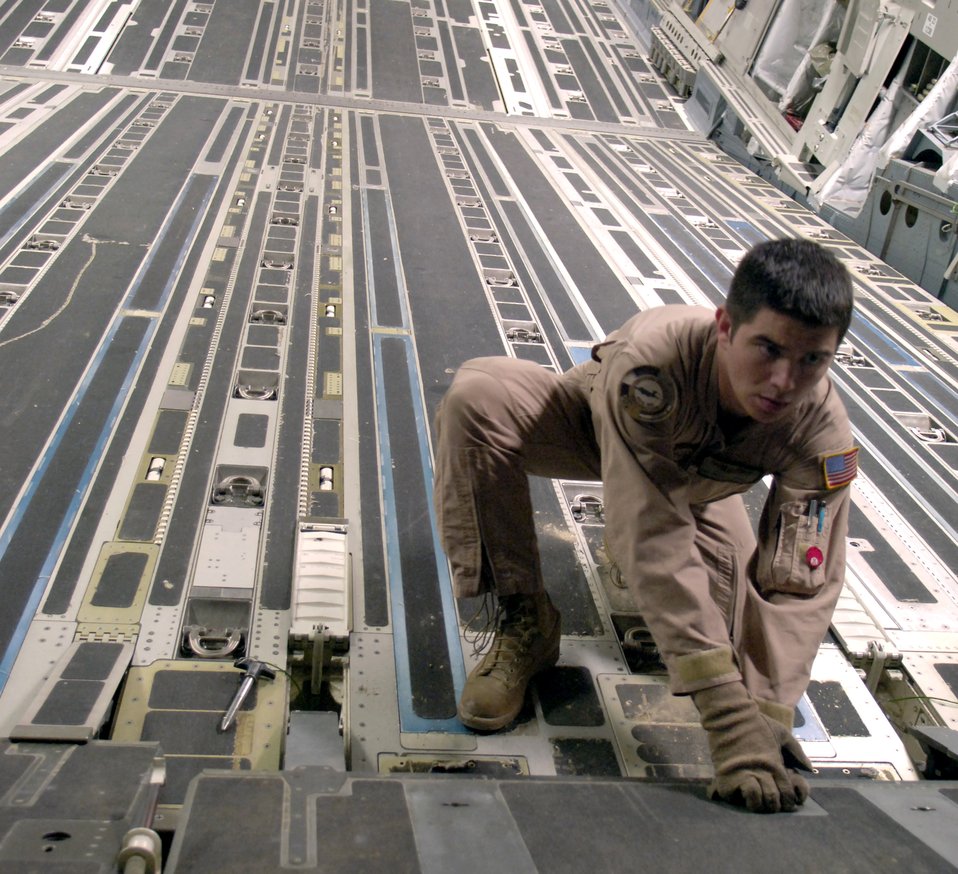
Preparing for delivery

Senior Airman Charles Reimer III configures the ramp of a C-17 Globemaster III before cargo is loaded at a forward operating location in Southwest Asia on Aug. 5. Airman Reimer is a loadmaster with the 816th Expeditionary Airlift Squadron. The squadron is instrumental in the war on terrorism, delivering cargo and troops in support of operations Iraqi Freedom and Enduring Freedom.